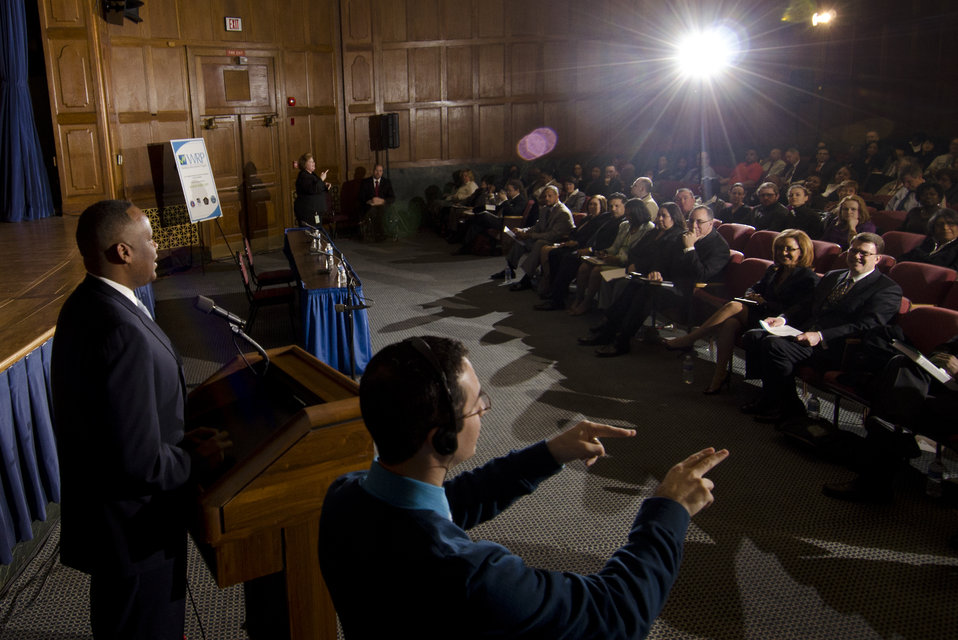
American sign language interpreter B.J. Kamerer (right) communicated to the hearing impaired during Kareem Dale (left), Special Assistant to the President on Disability Policy speech at the Work Force Recruitment Program’s (WRP) “Your Key To Hiring Student Interns and Employees with Disabilities” event hosted by the United States Department of Agriculture (USDA) at the Jefferson Auditorium, in Washington, D.C. on Tuesday, February 7, 2012.